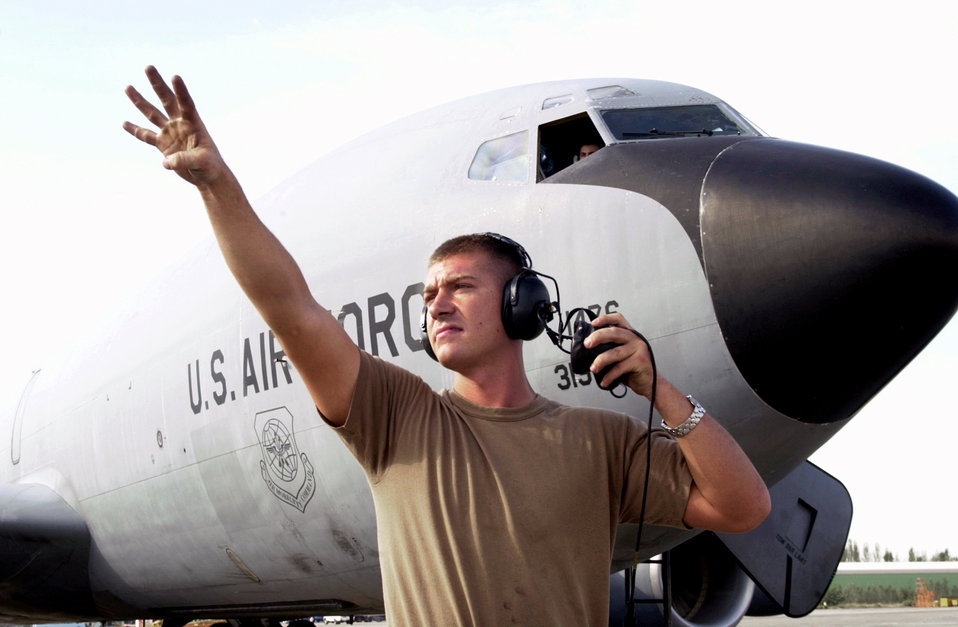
Van Cleave

GANCI AIR BASE, Kyrgyzstan -- Airman 1st Class Ryan Van Cleave signals for a communication and navigation specialist during preflight procedures. Van Cleave and his fellow crew chiefs and maintenance specialists kept the KC-135 Stratotanker fleet here at 100-percent mission capable for 17 consecutive days Aug. 25 through Sept. 10.